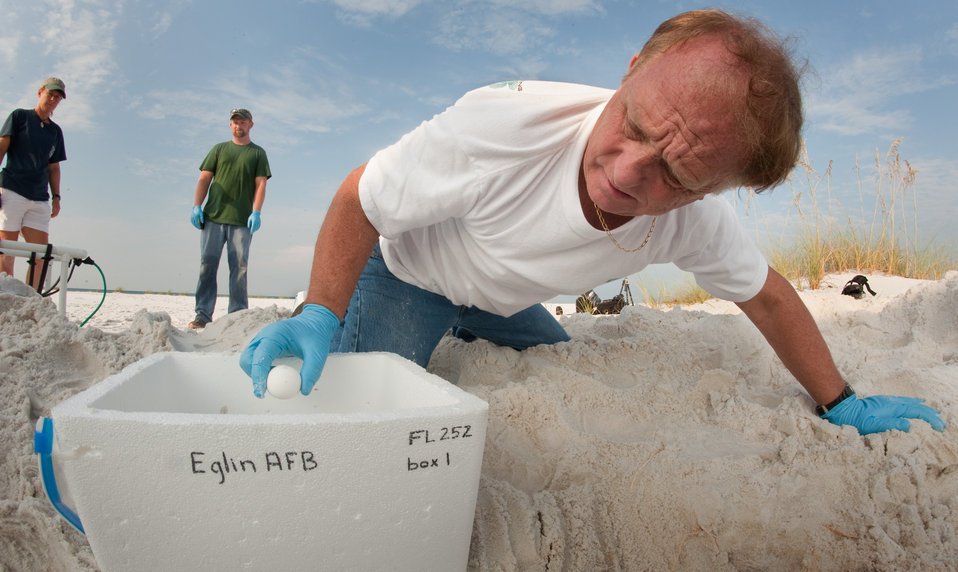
Turtle Eggs avoid Gulf Oil Danger

The honor of lifting the last of 112 Loggerhead sea turtle eggs went to Bob Miller, who carefully packing the eggs into Styrofoam coolers lined with the white sand at Eglin Air Force Base, Florida, on August 9, 2010. Mr. Miller is the Sea Turtle Program Manager with the 96th Civil Engineer Squadron. Because of the critical attachment of the embryo to the inside of the egg shell, the eggs must be gently lifted with out tilting or rotating, the egg. With equal care the transportation to the Atlantic coast is equally critical. At a controlled climate facility, they will be allowed to hatch in the cooler. Wildlife technicians will then release them into the ocean. Bob Miller, a retired Navy EOD diver, an endangered species biologist has for the past 10 years been the Sea Turtle program manager and primary permittee at Eglin Air Force Base, Fla. He has also served as the program manager for the Barrier Island and Gulf of Mexico, U.S. Fish and Wildlife Service, Endangered Species Act, Section 7 Consultation; Coastal Zone Management Act, Marine Mammal Protection Act, and Coastal Barrier Resources Act.